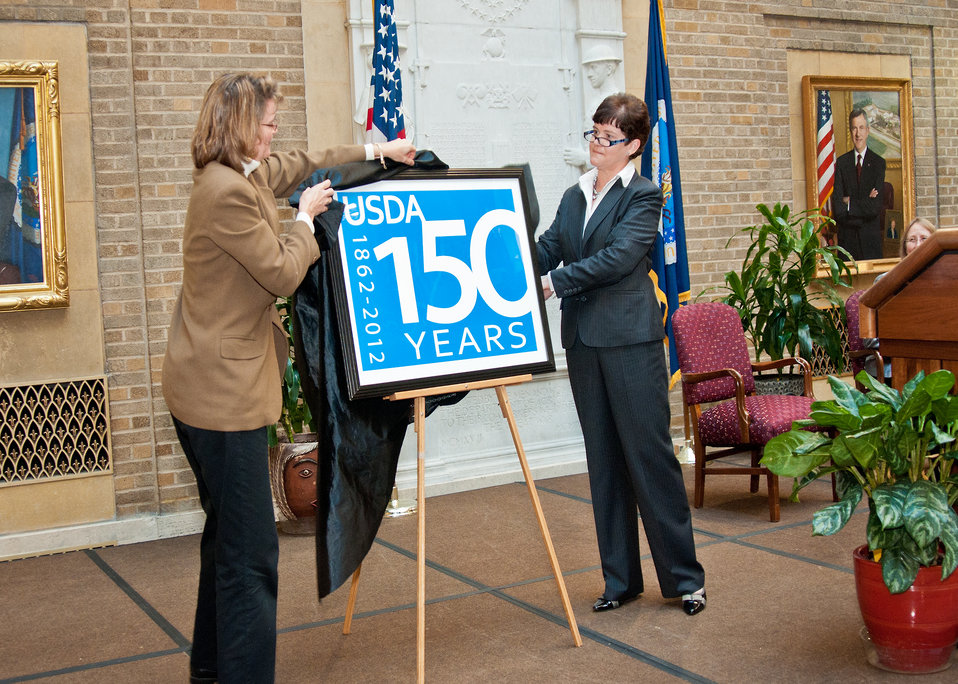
Carolyn O’Connor, Director, Brand, Events/Exhibitions and Editorial Review (left) and Krysta Harden (right), Chief of Staff unveil the graphic for the upcoming year long celebration of the United States Department of Agriculture’s 150th anniversary in Washington, DC Wednesday, November 2, 2011. President Abraham Lincoln established the United States Department of Agriculture in 1862. USDA stills fulfills the vision he set forth when he called us the “People’s Department” touching the lives of every American everyday. Throughout the coming year USDA will commemorate important events, such as, the signing of the Department of Agriculture Organic Act on May, 15, 1862 by President Lincoln, which established the Department, and the June signing of the Morrill Act to establish our public land grant universities.